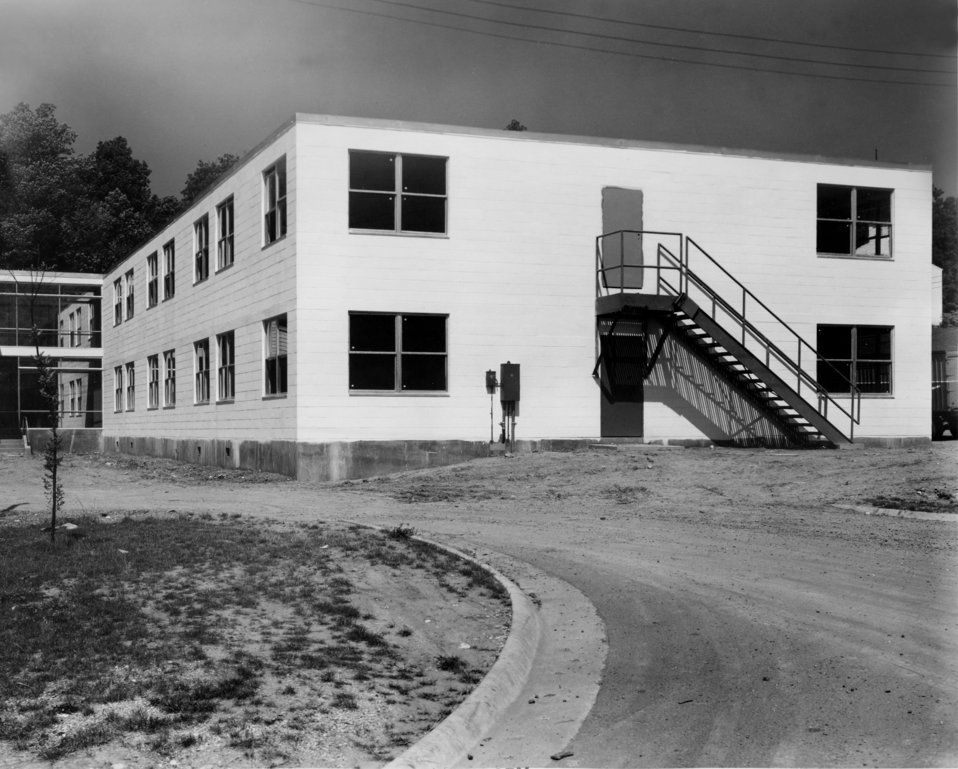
Guest House Addition Oak Ridge

DOE photo by Ed Westcott 1949 Oak Ridge Tennessee